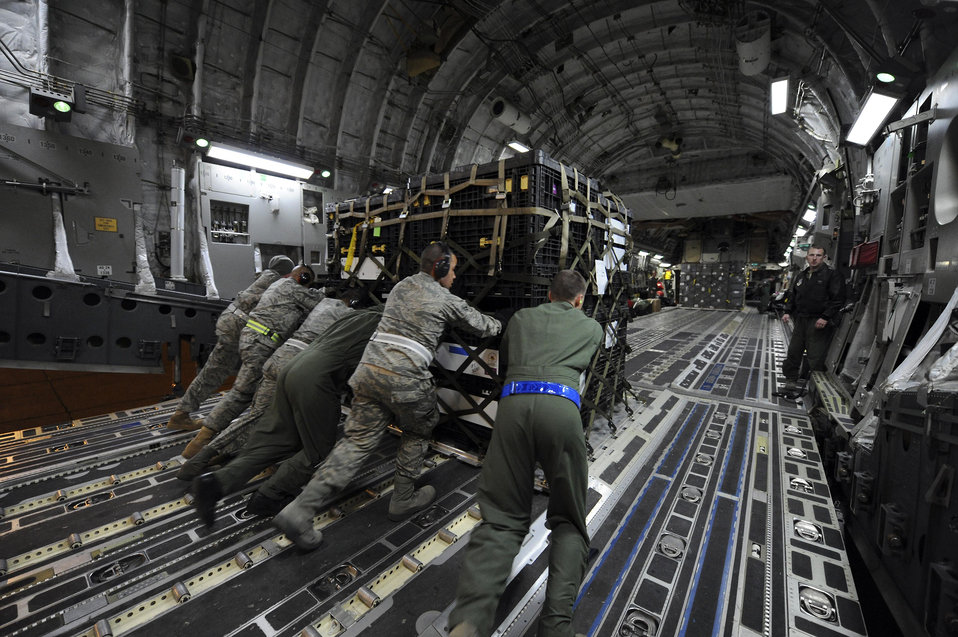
Ready, set, PUSH!

Airmen position a pallet of supplies in a C-17 Globemaster III March 12, 2011, at March Air Reserve Base, Calif. The supplies are en route to Japan for earthquake and tsunami relief efforts.